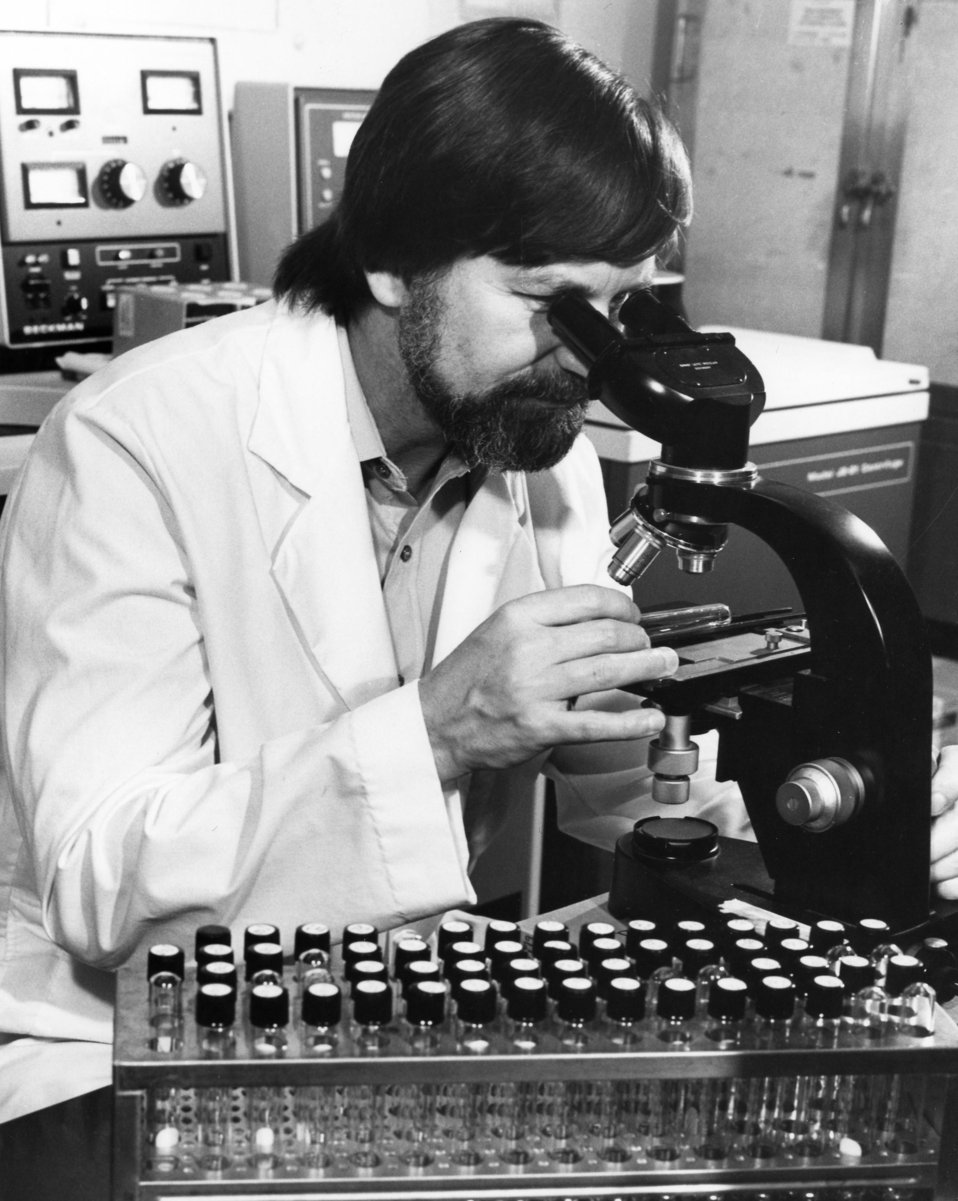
This photograph shows Kenneth Herrmann, MD, Chief of Viral Exanthems and Herpesvirus Branch at the CDC, looking into a microscope to examine inoculated cell cultures in search of viruses.